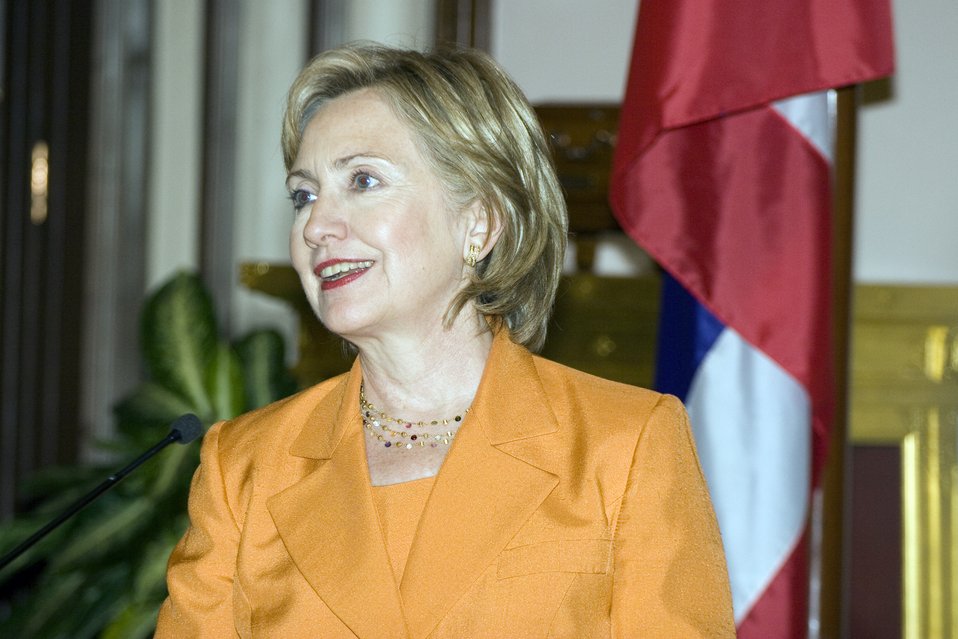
U.S.-Thailand Bilateral Meeting

U.S. Secretary of State Hillary Rodham Clinton answers questions from the press following the bilateral meeting at Government House in Bangkok, Thailand July 21, 2009.